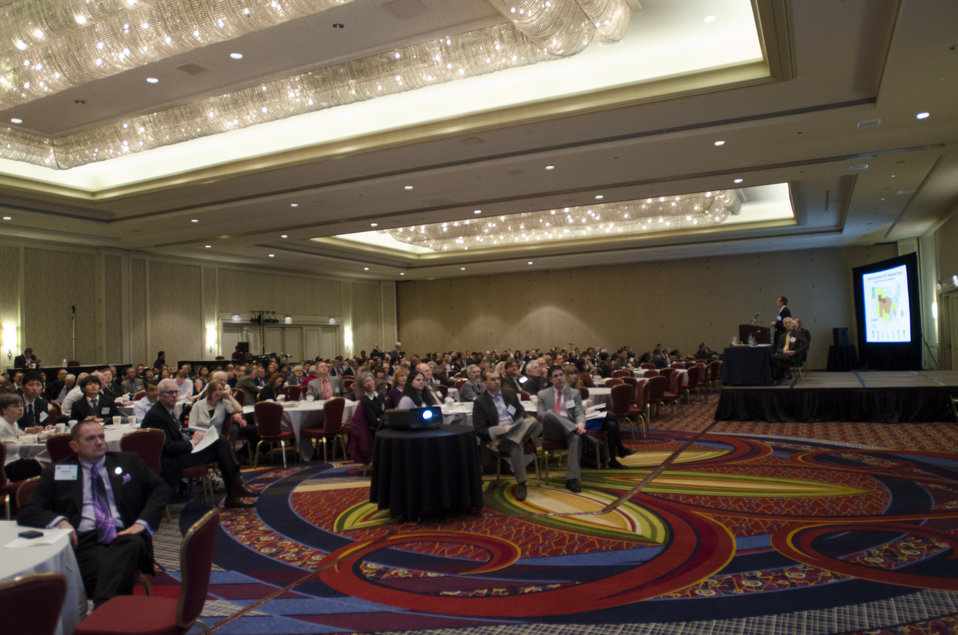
The U.S. Department of Agriculture (USDA) 2013 Agricultural Outlook Forum was held at the Crystal Gateway Marriott Hotel in Arlington, VA on Friday, Feb. 22, 2013. The breakout session on Grains and Oilseeds Outlook analyzed the metrological factors behind last summer’s historic drought, evaluated the effects of summer weather on corn and soybean yields, and provided the 2013 supply and demand outlook for wheat, corn, and soybeans.